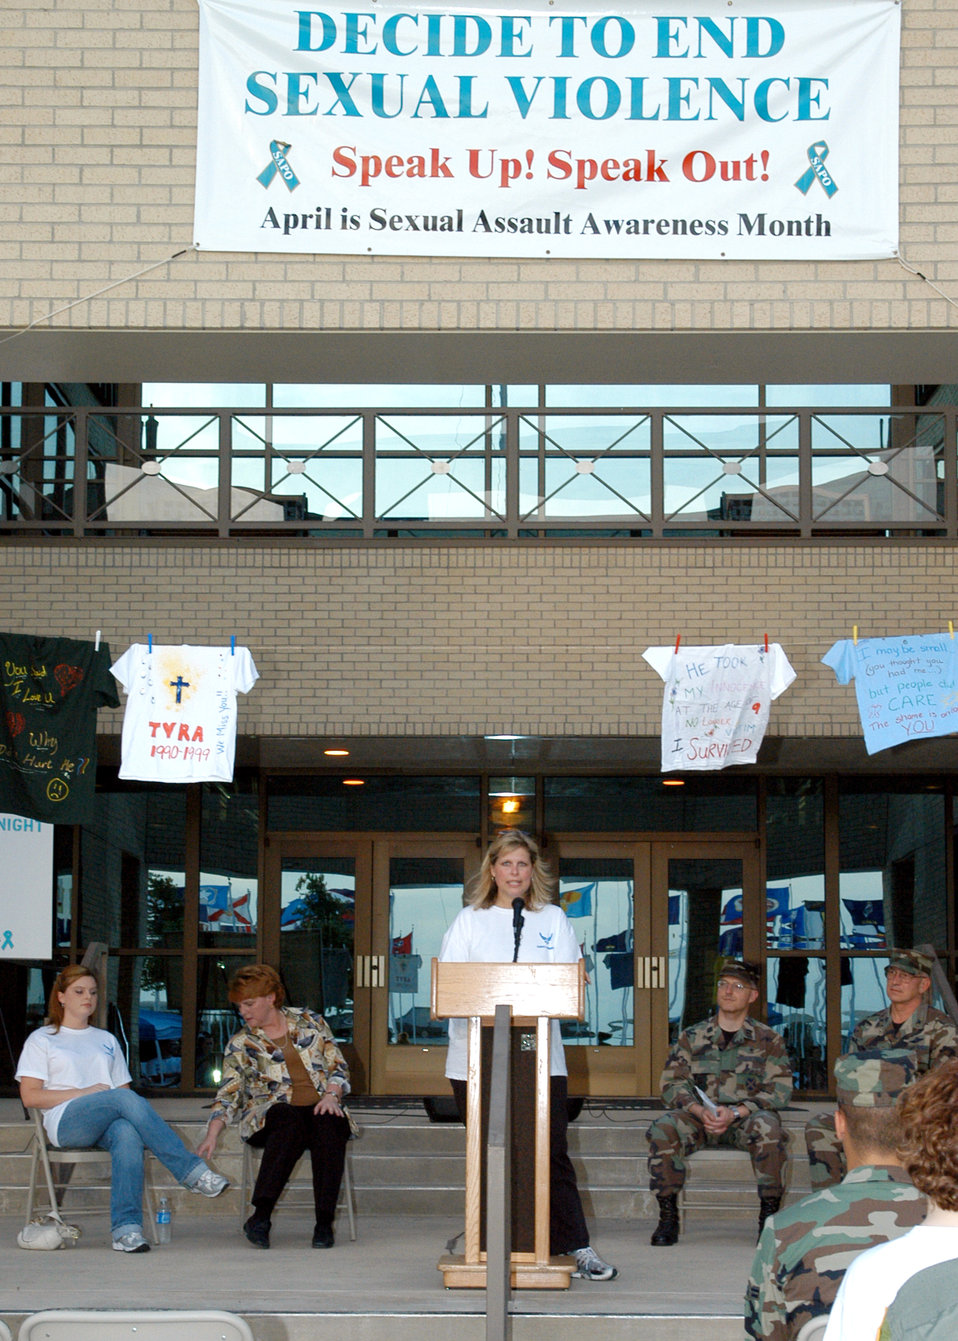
Sexual assault prevention director is a myth buster

Dr. Charlotte Moerbe speaks during the